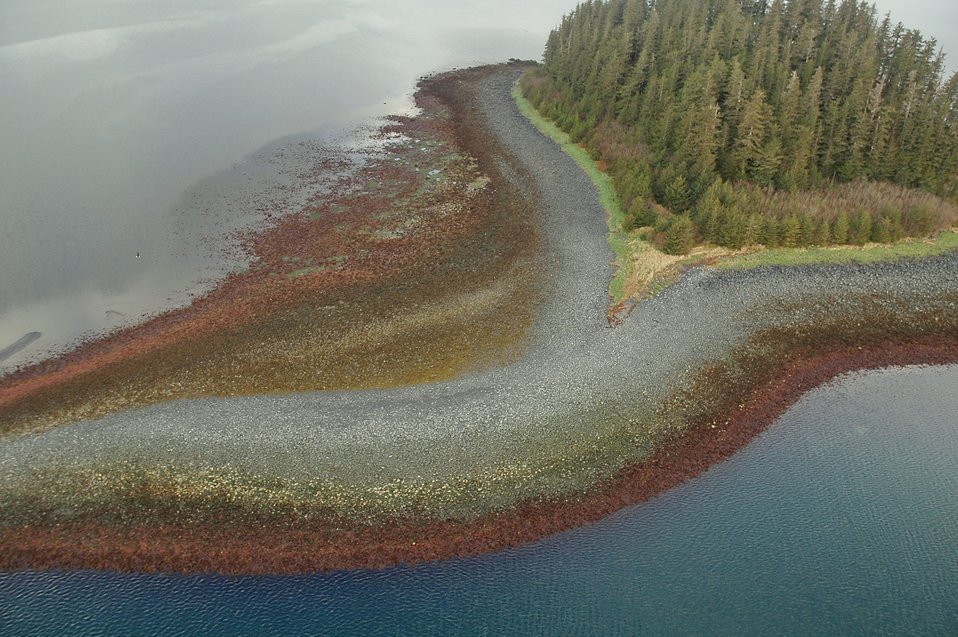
Aerial photograph. A small heart-shaped island at Port Chalmers showing the color banding of various bands of marine and terrestrial flora.